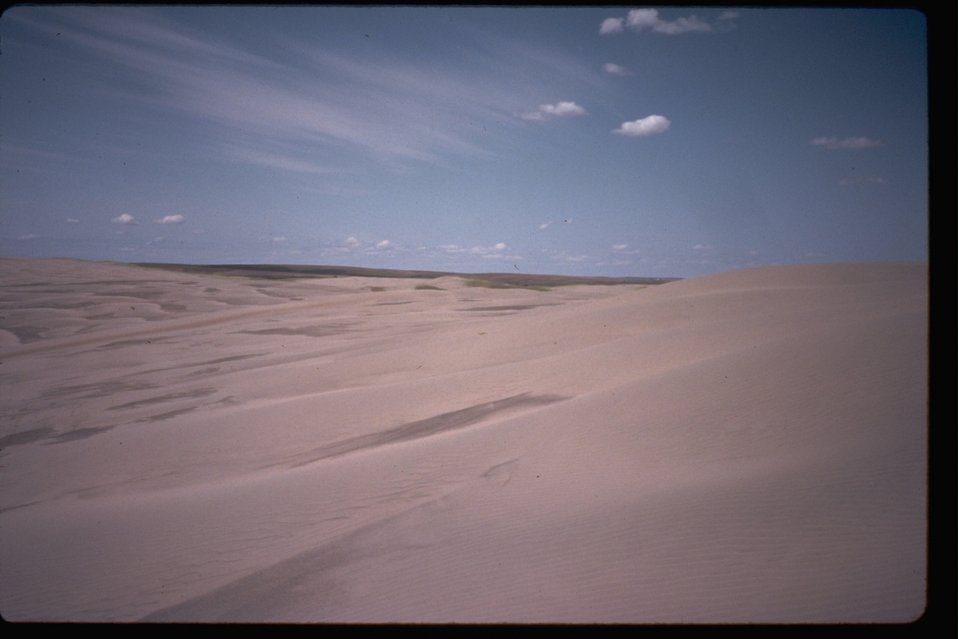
Juniper Dunes Wilderness in Franklin County, WA.